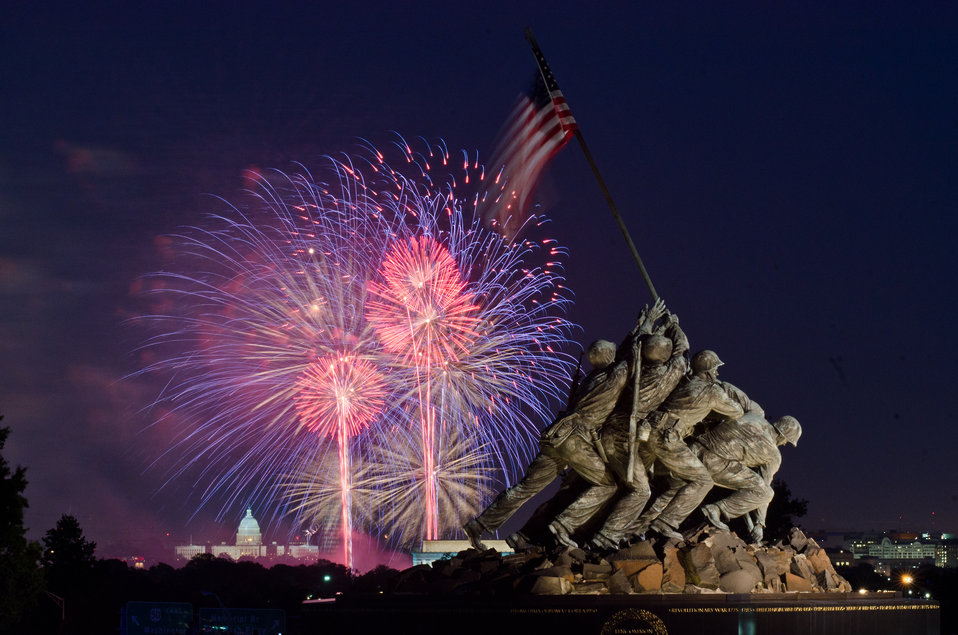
Independence Day celebration fireworks are seen from the Iwo Jima, U.S. Marine Corps Memorial in Arlington, VA on Jul. 4, 2013. In the distance are the Lincoln Memorial, the U.S. Department of Agriculture (USDA) Yates Building (dark red brick building), the Washington Monument (with scaffolding), and the U.S. Capitol building in Washington, D.C.